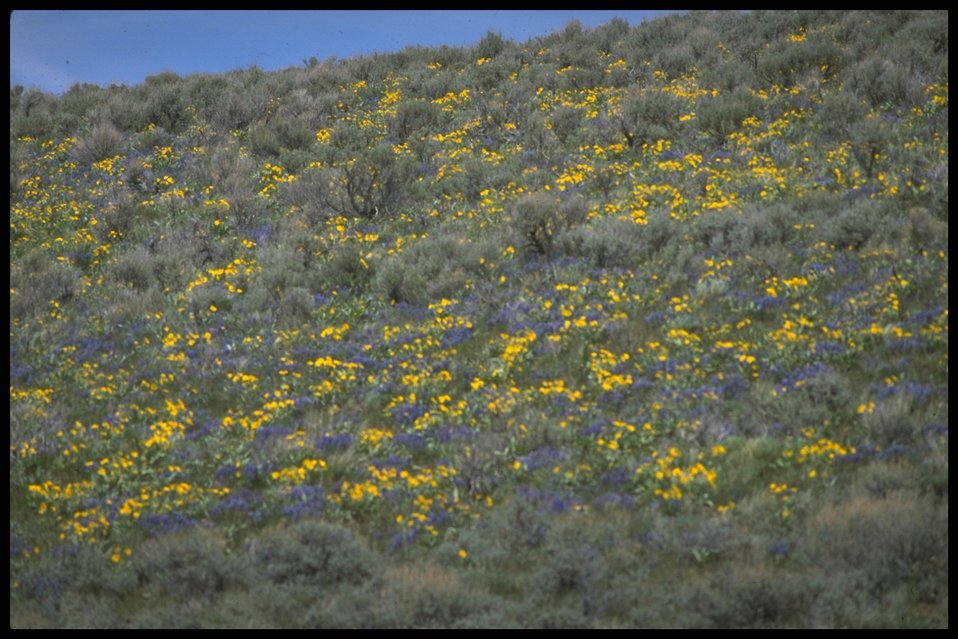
Far shot of Lupine and Balsom habitat, Lakeview District.